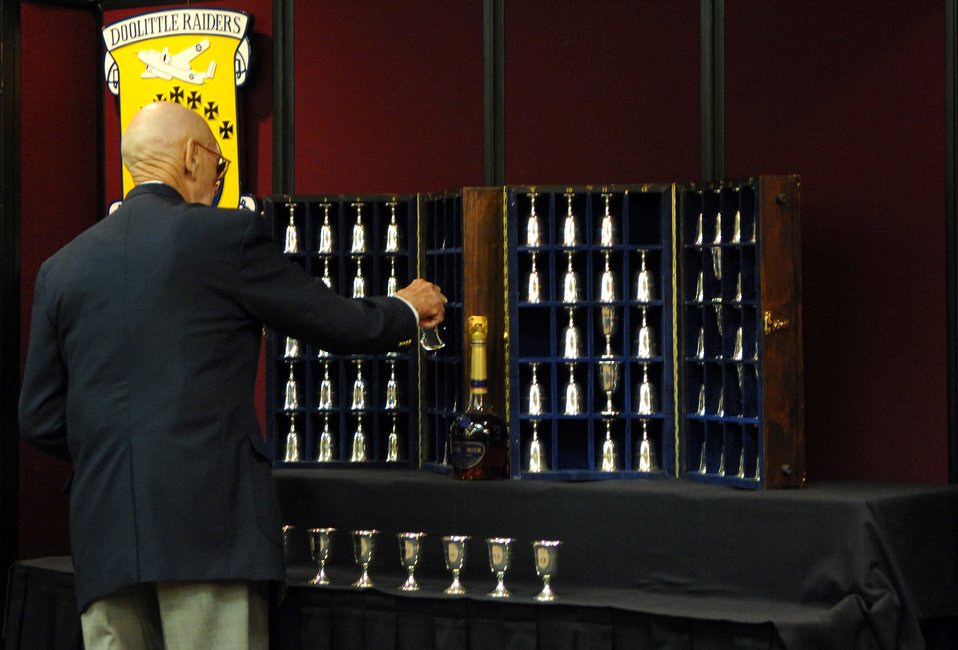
Raider goblet ceremony

Retired Lt. Col. Dick Cole turns over the goblet of Lt. Col. Chase Nielson, a Doolittle Raider who died March 23, during a goblet ceremony in San Antonio April 18. When a Raider dies, his goblet is turned upside down. When there are but two Raiders left, the two men will open a bottle of cognac, vintage 1896 (the year Doolittle was born) and give a final toast to their departed comrades. Fourteen of the 80 Raiders are still alive.